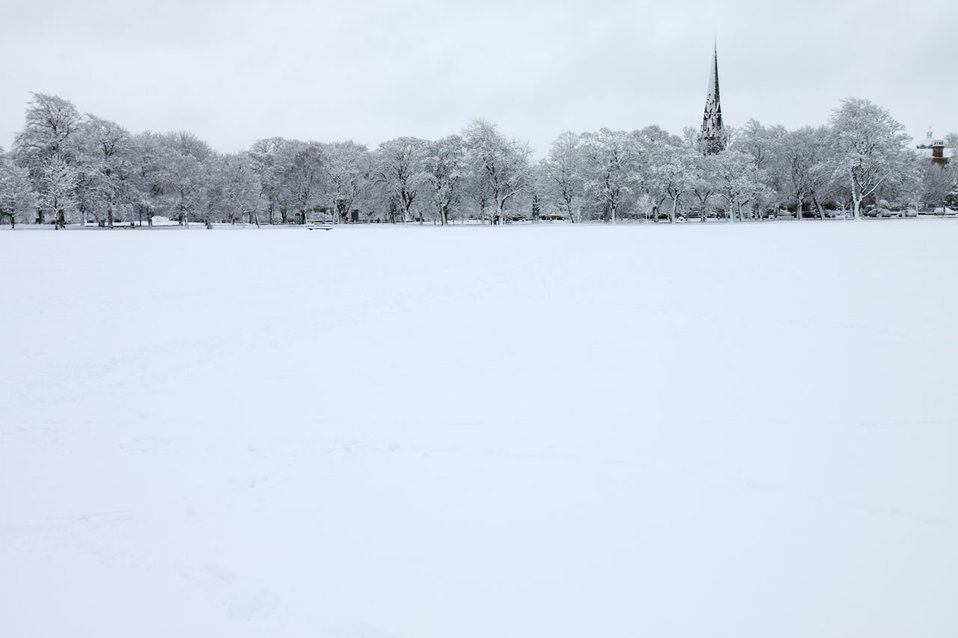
Winter park scenery with plenty of text space.